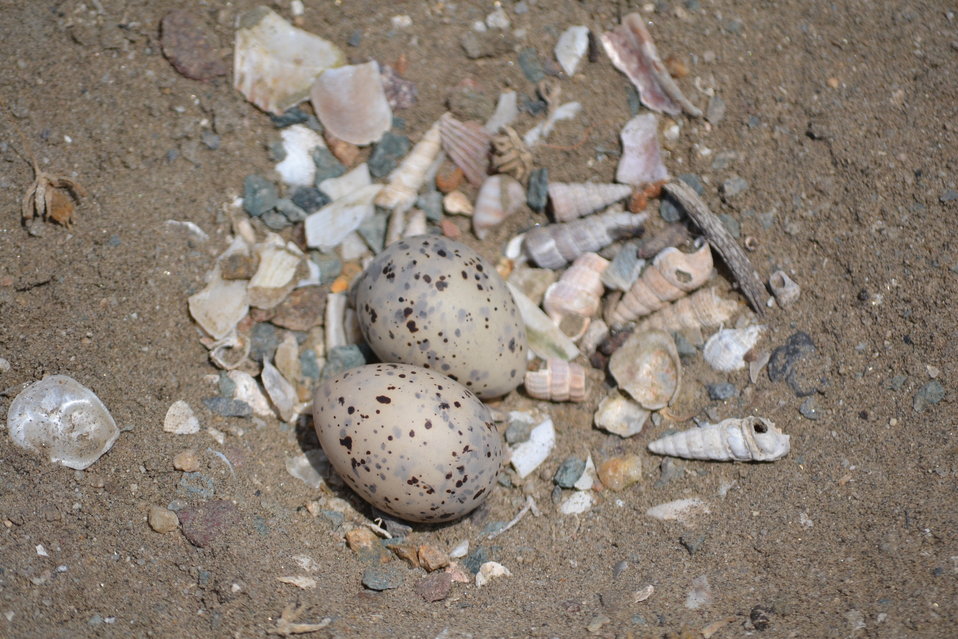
Western snowy plover (Charadrius alexandrinus nivosus) nest in a bed of shells

Often, breeding western snowy plovers will gather nearby shells to help hold and camouflage their eggs (and brood)